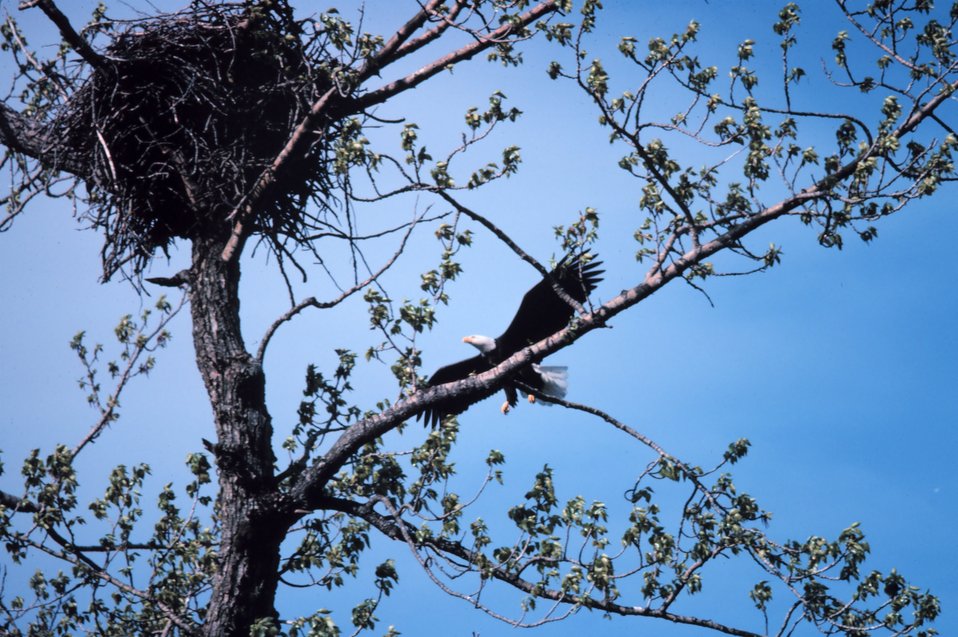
Bald Eagle - Haliaeetus leucocephalus.